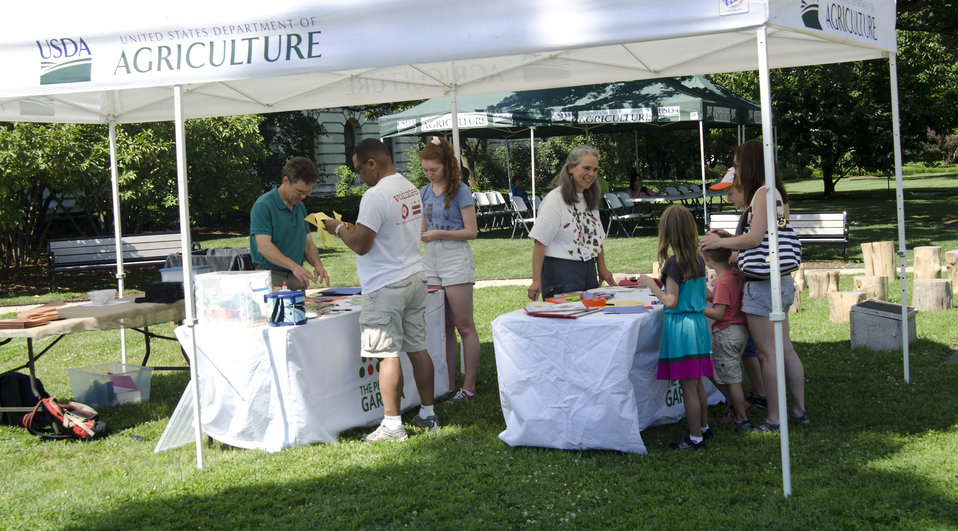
Peoples Garden Pollinator Display at the U.S. Department of Agriculture in Washington, DC, on Friday, June 21, 2013.